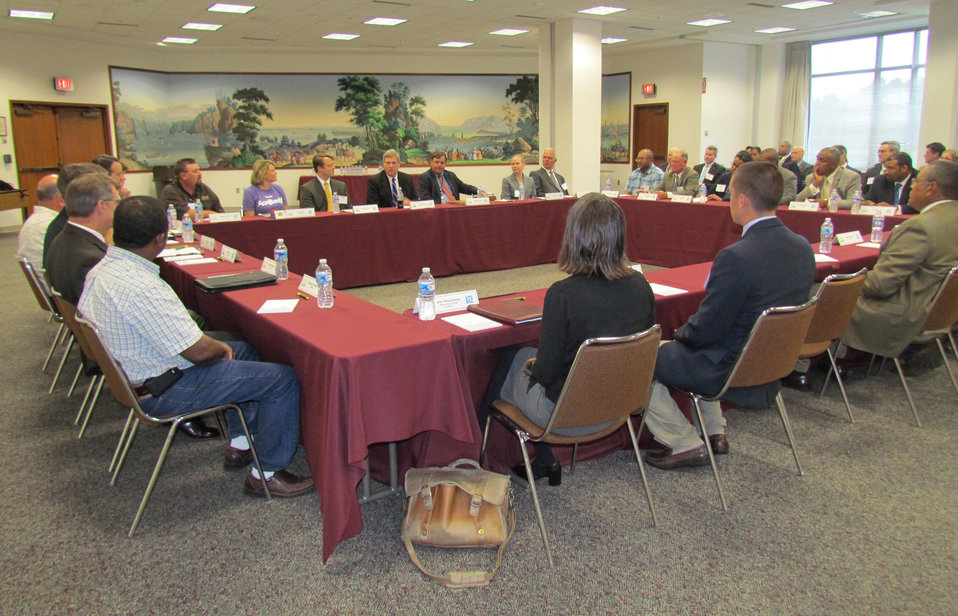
Agriculture Secretary Tom Vilsack attended roundtable meeting with America's Farmers and Ranchers in Richmond, VA., on Wednesday, May 23, 2012.